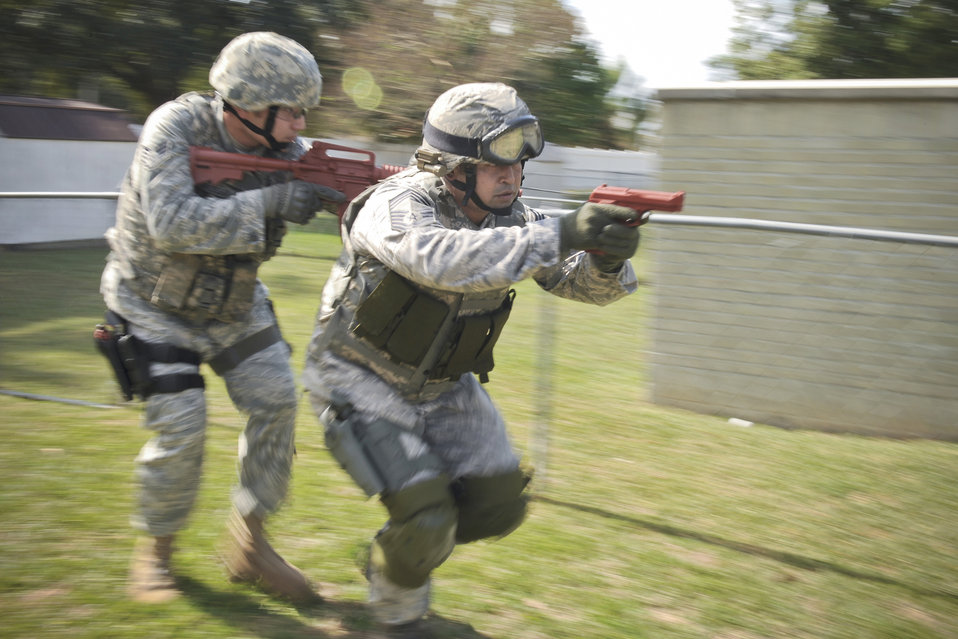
Mentoring the Future

Chief Master Sgt. Joseph Pritchard and Staff Sgt. Michael Grosso perform tactical team movements during active shooter training Oct. 28, 2010, at Moody Air Force Base, Ga. Chief Pritchard believes it is important to give younger Airmen the necessary tools to keep the mission going because they are the future of the Air Force. Chief Pritchard is the 3rd Security Forces Squadron security forces manager. Sergeant Grosso is a patrol leader with the 23rd.